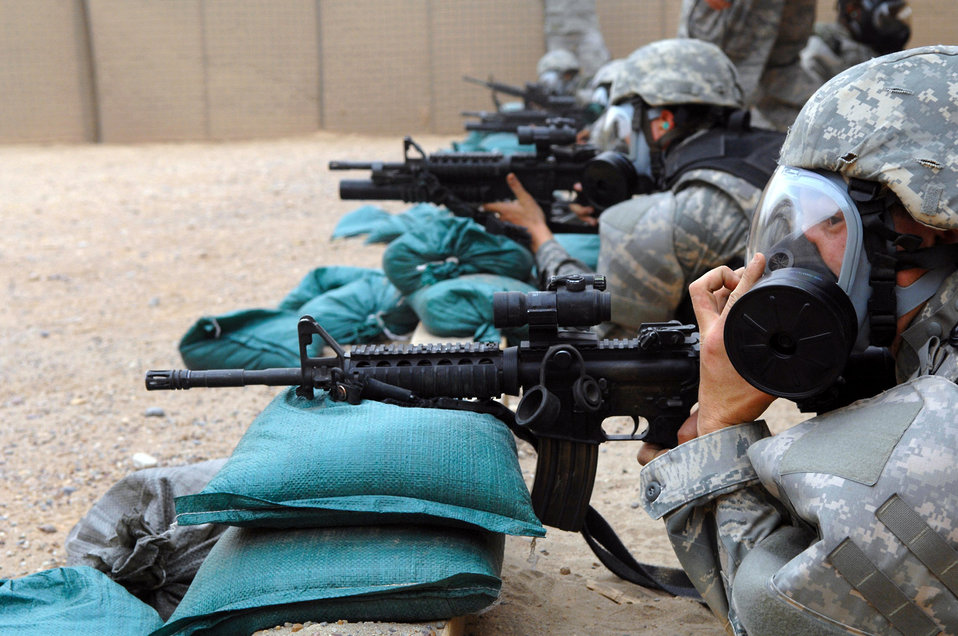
Zeroing in

Airmen from the 332nd Expeditionary Security Forces Squadron fire M-4s with their gas masks on April 30 at Balad Air Base, Iraq. Security forces ensure the safety of Airmen on base so they can complete their missions and launch aircraft. This is the primary task of security forces personnel and is executed and practiced on a daily basis.